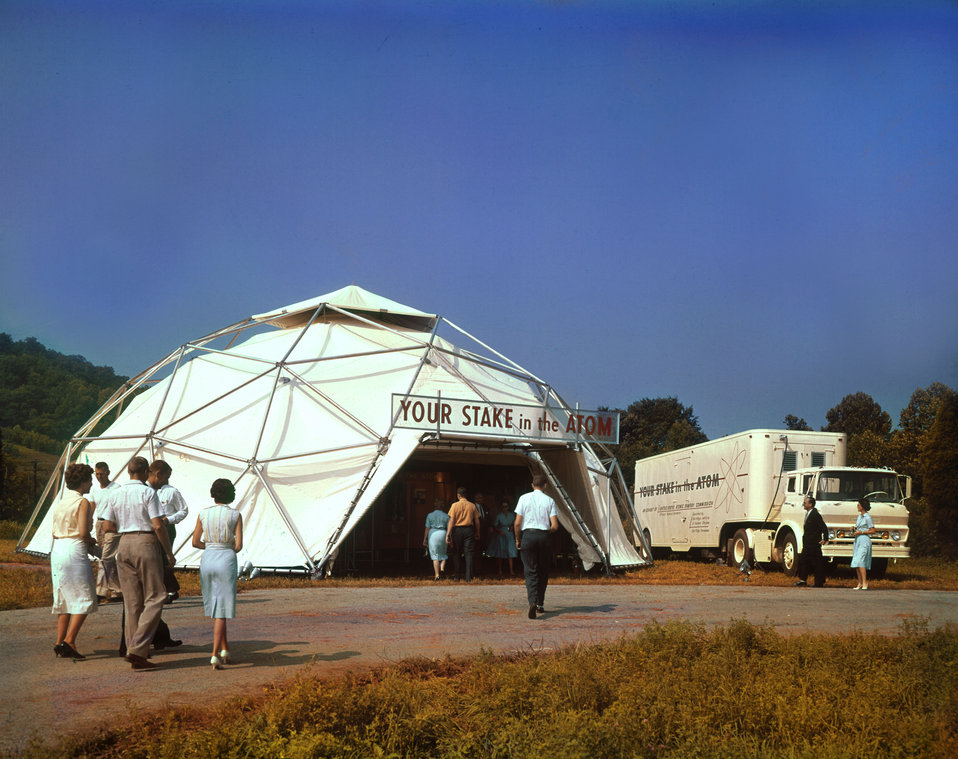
Your Stake in the Atom Oak Ridge

DOE photo by Ed Westcott

Your Stake in the Atom a special traveling exhibit of U.S. Atomic Energy Commission, is housed in its own geodesic, exoskeleton structure some 20 feet high and 50 feet in diameter. Oak Ridge Tennessee 1966